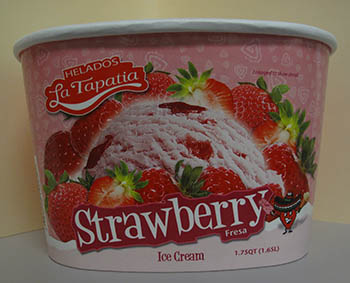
RECALLED – Ice cream products

March 19, 2014 – Product Recall – Helados La Tapatia, Inc. Recalls Products Because of Possible Health Risk.